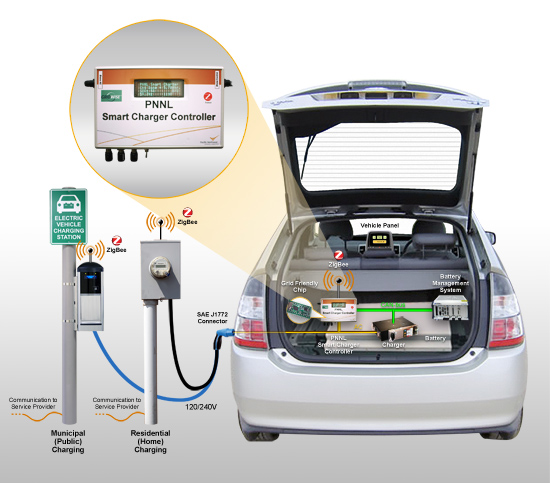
California-based Aerovironment, Inc. has licensed a technology from PNNL that will potentially allow widespread adoption of Plug-In Electric Vehicles without negatively impacting the electrical grid.
PNNL technology tells a vehicle's battery charger when to start and stop charging based upon existing conditions on the electrical grid. AeroVironment will use a portion of the licensed technology in a new prototype version of its Level II charging systems.